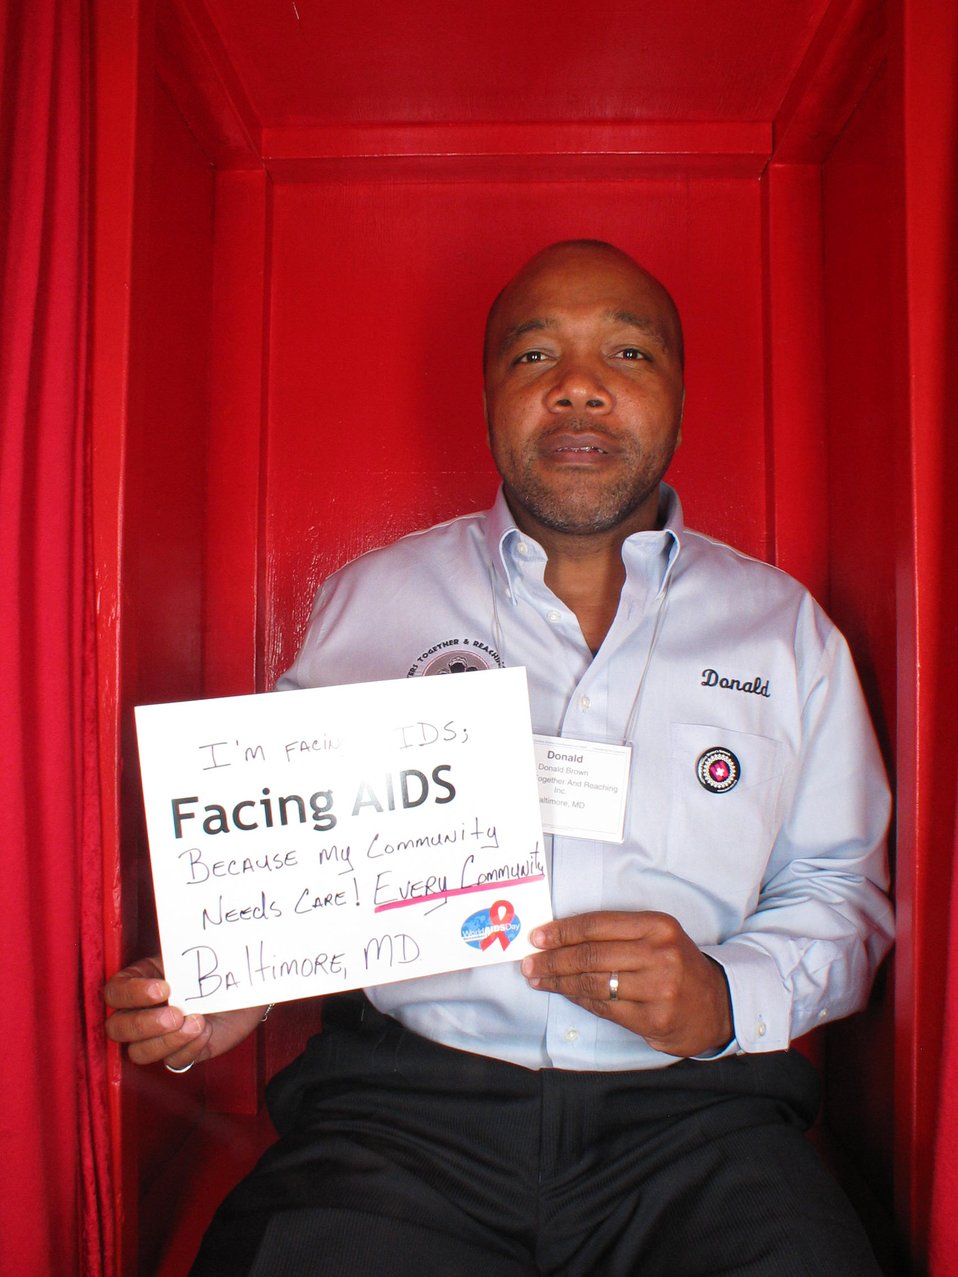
Facing AIDS because my community needs care!